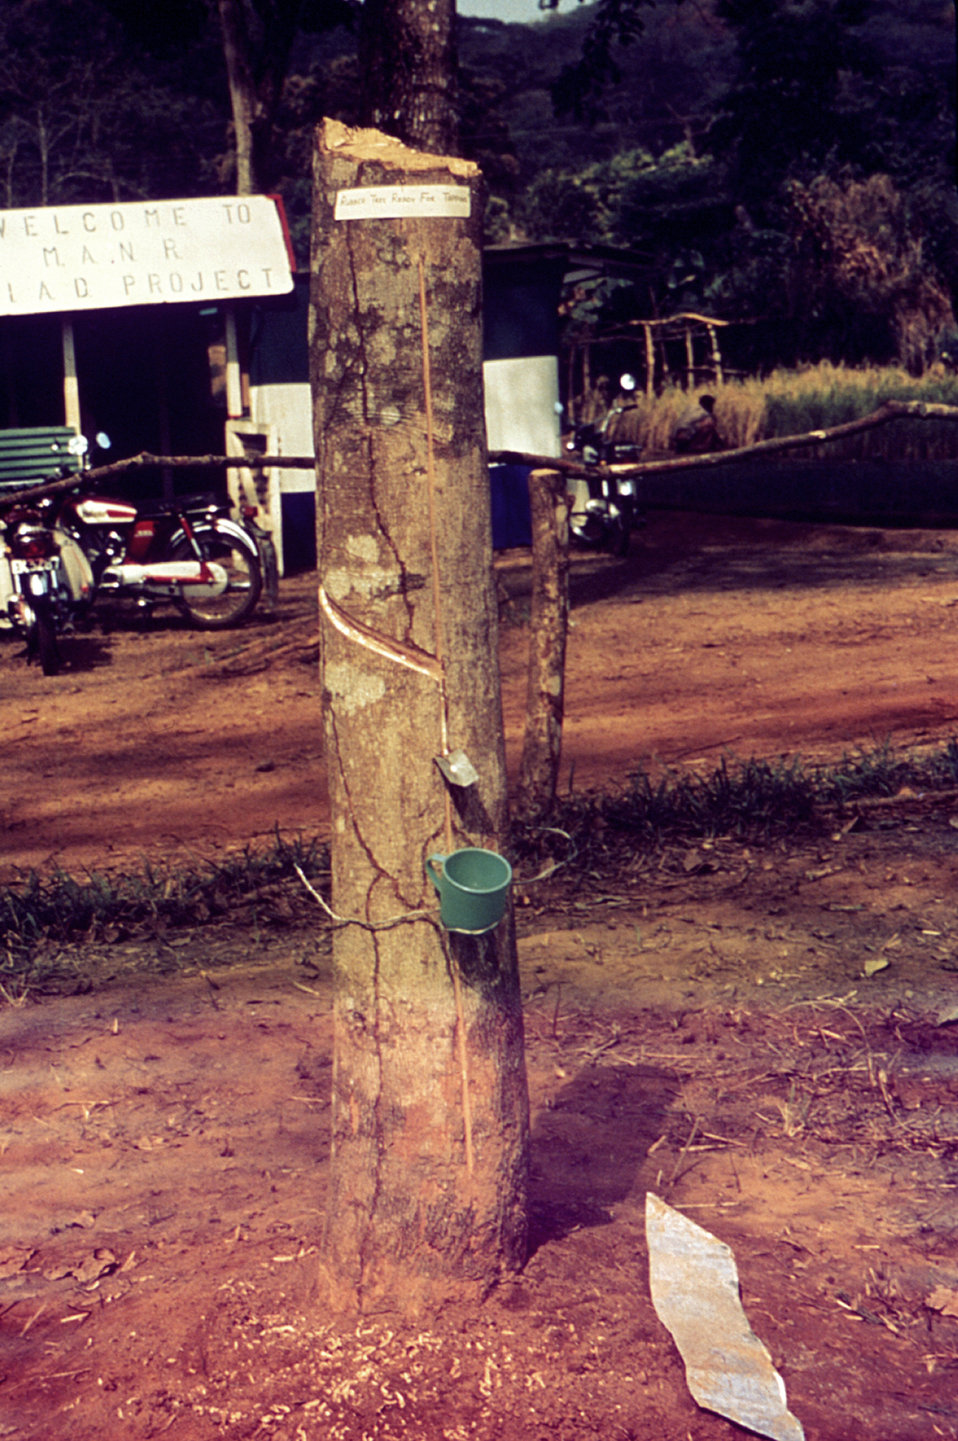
This image depicts a rubber tree with a collecting cup at the site of a 1976 Sierra Leone Lassa fever field study.